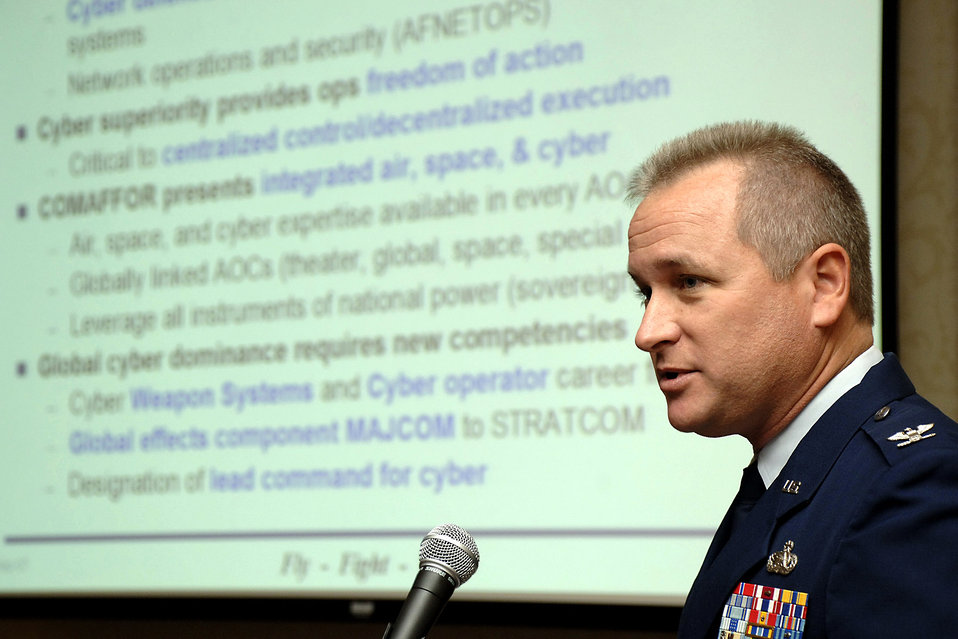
Air Force leaders discuss need to control cyberspace

Col. Tony Buntyn addressed the Fifth Annual Net-Centric Operations Conference Sept. 24 in New Castle, N.H., focusing on the importance of controlling cyberspace. Colonel Buntyn is the director of 8th Air Force's Global Cyberspace Air Operations Center at Barksdale Air Force Base, La.